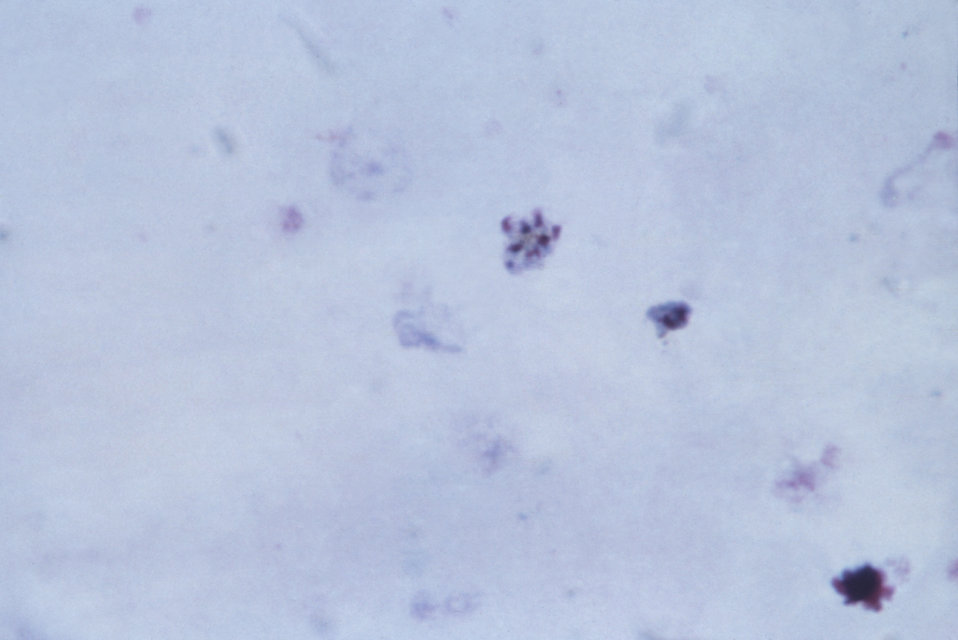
This thick film Giemsa stained micrograph reveals the presence of a mature P. malariae schizont, and an old trophozoite.